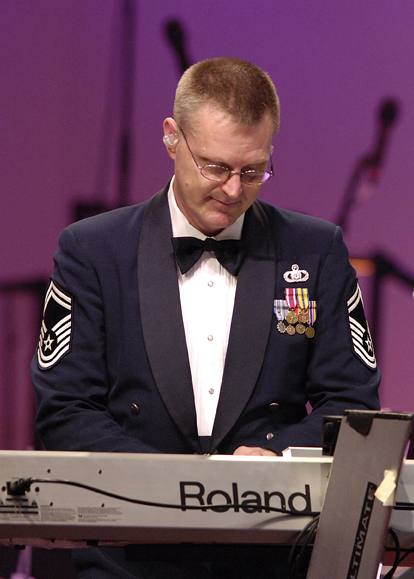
Children tune in Air Force

Senior Master Sgt. John Henley, United States Air Force Band Keyboard Player, performs during a holiday concert at the Daughters of American Revolution Constitution Hall in Washington Dec. 1, 2006.